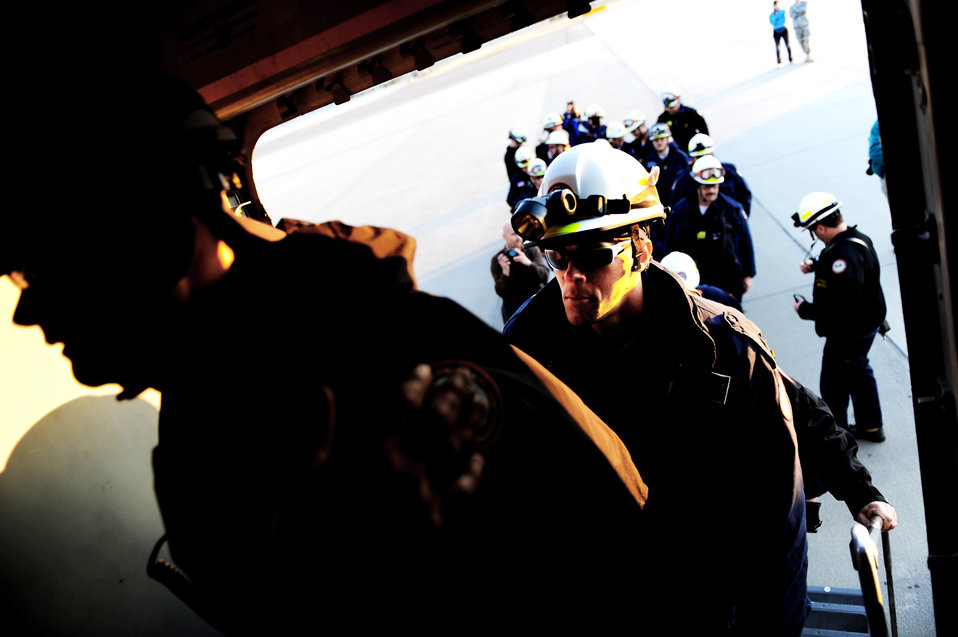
Haiti Earthquake Relief

Members from the Virginia Task Force 2 Urban Search and Rescue team board a C-17 Globemaster III from Travis Air Force Base, Calif., Jan. 15, 2010, at Norfolk, Va. The Task Force 2 team is heading to Haiti as part of the Haiti earthquake relief effort.